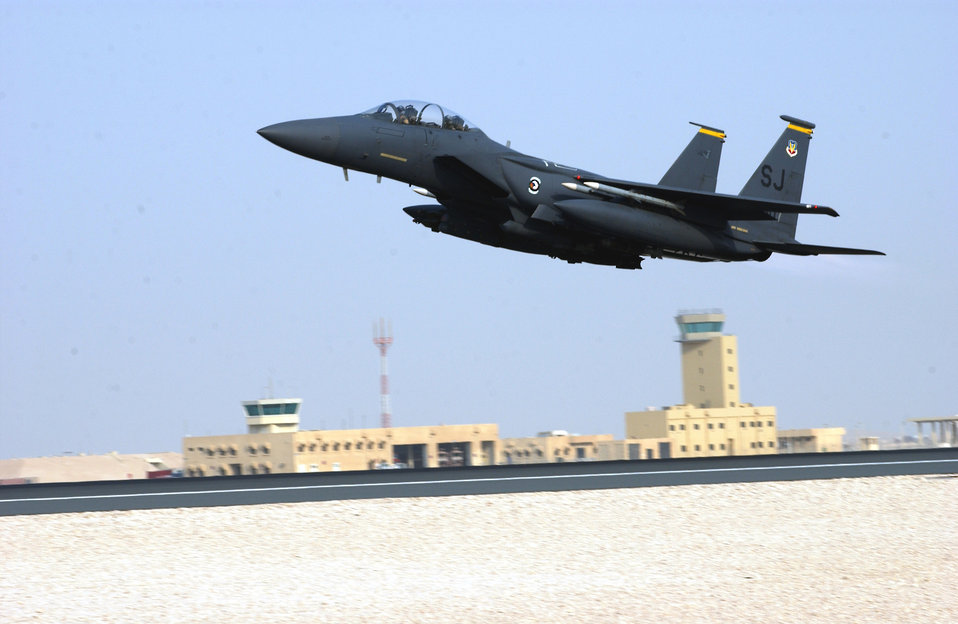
Keeping the strike in the Strike Eagles

An F-15E Strike Eagle from the 335th Fighter Squadron takes off from a forward-operating base in Southwest Asia Sept. 3.